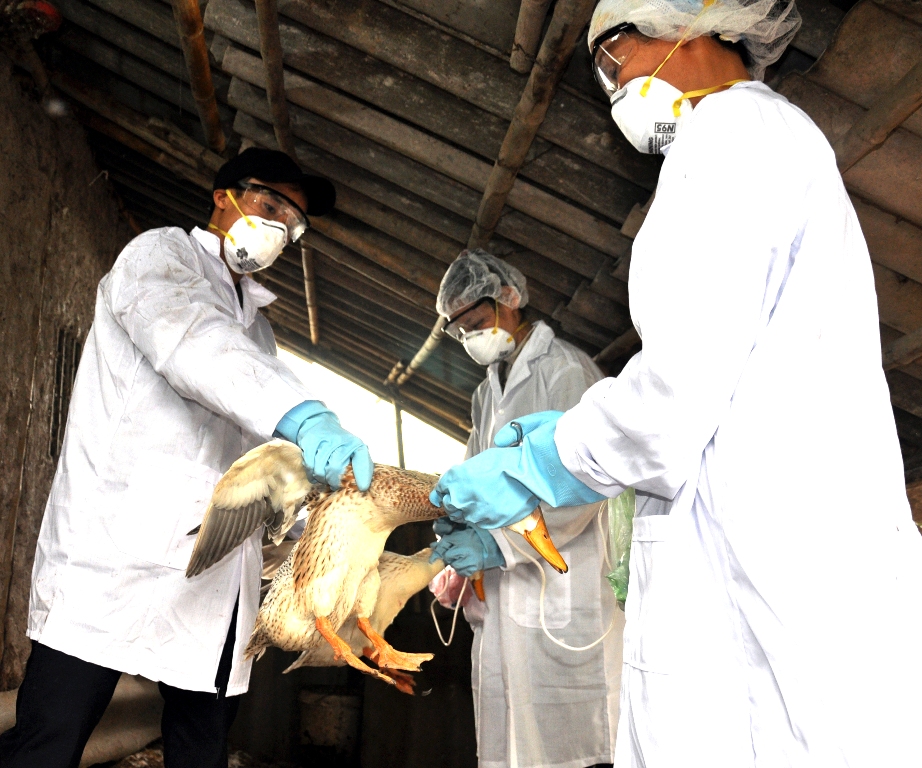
USAID helps Vietnam combat bird flu

Duck vaccination among mobile flocks is key.